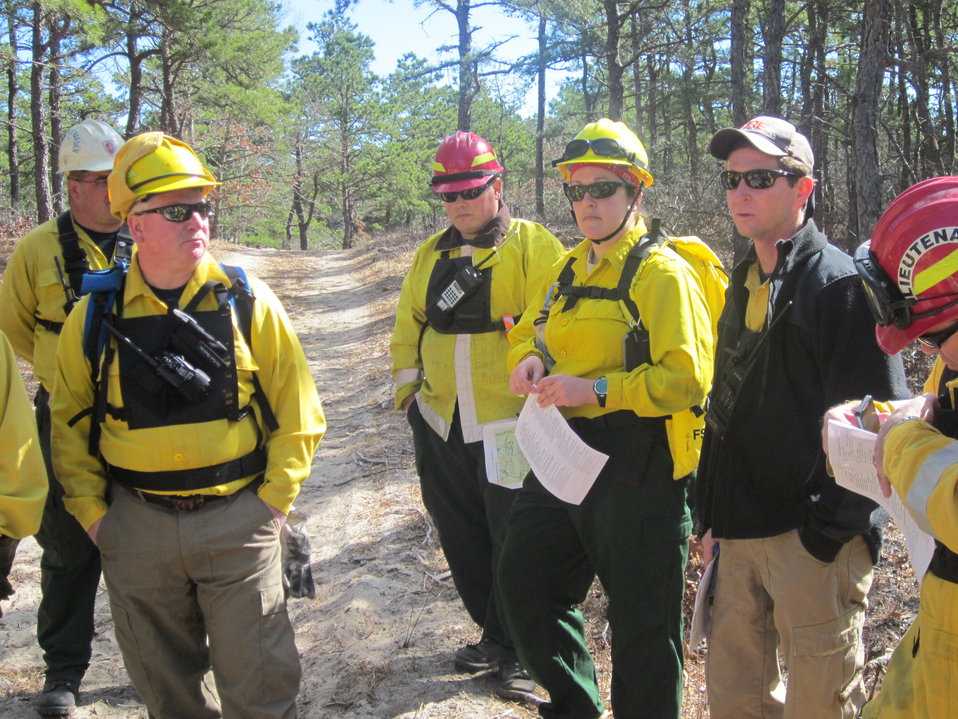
Interagency Firefighters

Mashpee, Massachusetts, April 5, 2012. Firefighters from the U.S. Fish and Wildlife Service, State of Massachusetts Department of Conservation and Recreation, and Town of Mashpee gather to do a controlled burn on the Town of Mashpee Holland Hill Barrens area of Mashpee National Wildlife Refuge. Left to right Josh Nigro (DCR), Tom Eagle (USFWS), Steve Faustino (DCR), Kate Iaquinto and Dave Walker (USFWS), and Rick Thayer (Mashpee). The burn reduced fire risk to neighboring homes and improved habitat for the New England cottontail.